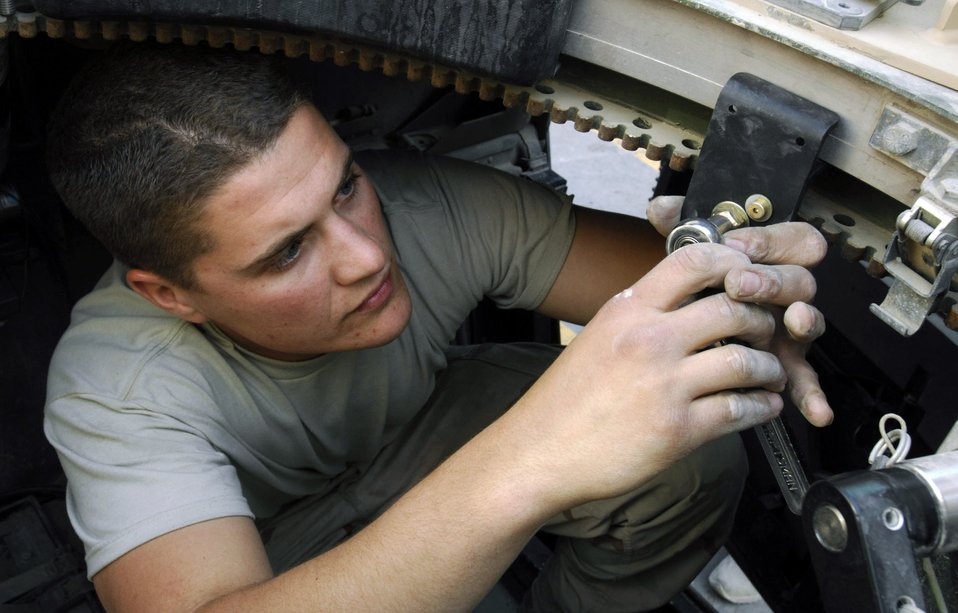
Frag Team Five

Senior Airman Josh Theunissen installs components of a gunner's restraint inside the turret of a Humvee Nov 27He is a member of Frag Team 5, which is responsible for installing up-armor kits, fire suppression systems, improved seat belts and gunner restraints in Air Force combat vehicles.